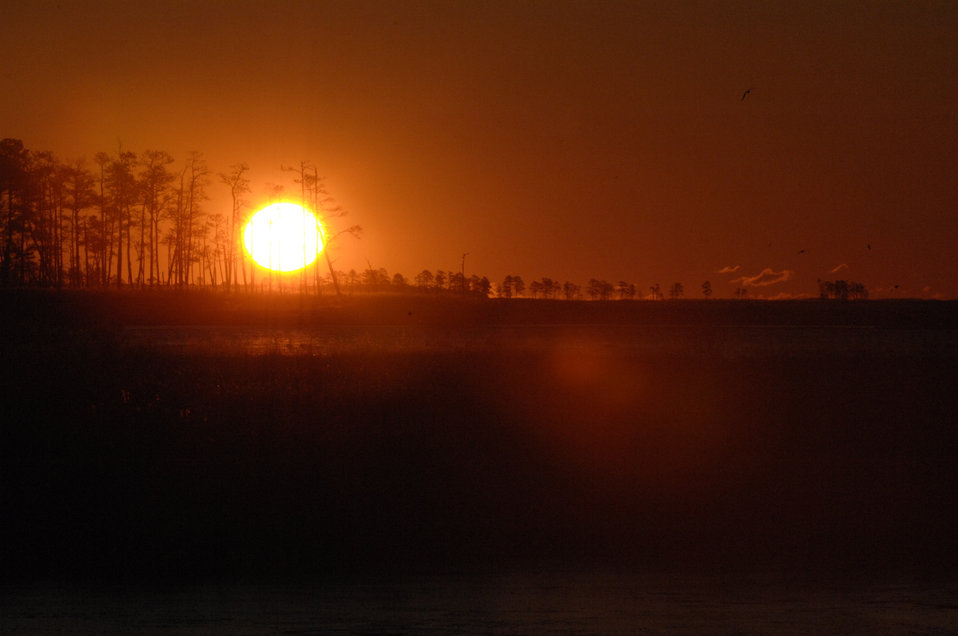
Sun rise on Blackwater Marsh at Blackwater National Wildlife refuge in Cambridge, Maryland on March 9, 2006. The refuge is a waterfowl sanctuary for migrating birds along the critical migration highway called the Atlantic Flyway. Blackwater refuge has over 25,000 acres of freshwater impoundments, brackish tidal wetlands, open fields, and mixed evergreen and deciduous forests.